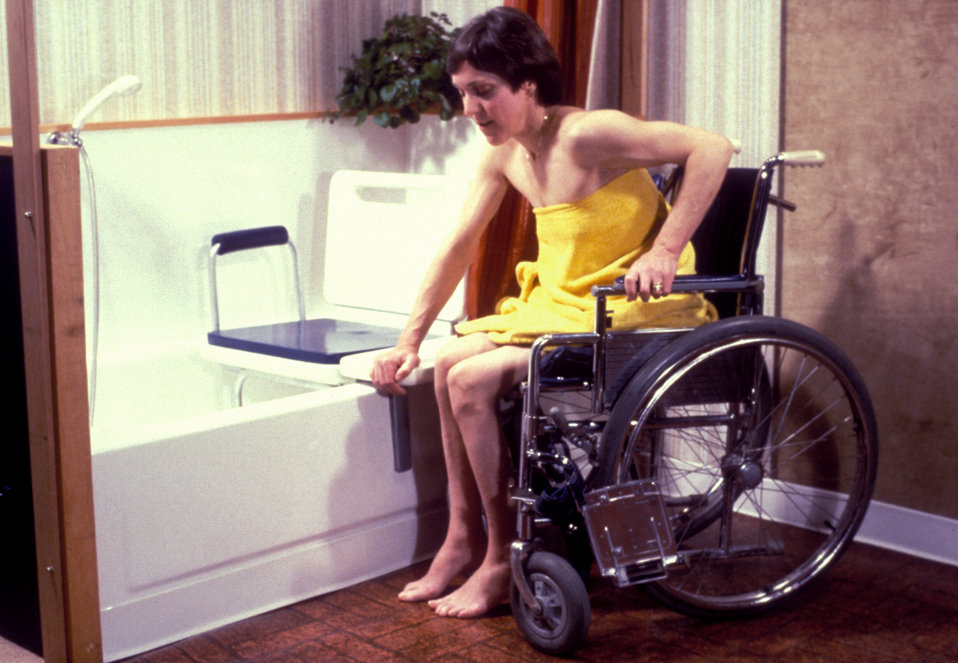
This was one of five images (PHIL# 9170 - 9174), depicting the action of two different mobility-challenged women getting into a bathtub by making use of an assistive in-tub seating apparatus. In this particular view, a woman, who was seated on the in-tub bench, was either exiting the tub, or entering the tub while she was grasping the nearby wheelchair for stability and support. With back support and armrests, a bathtub seat could be clamped to the tub rim for stability, and acted as an effective, popular solution for many people with disabilities. These designs work best for those who could transfer from their mobility devices, or could walk, but have difficulty standing for extended periods of time because of balance, or stamina limitations.